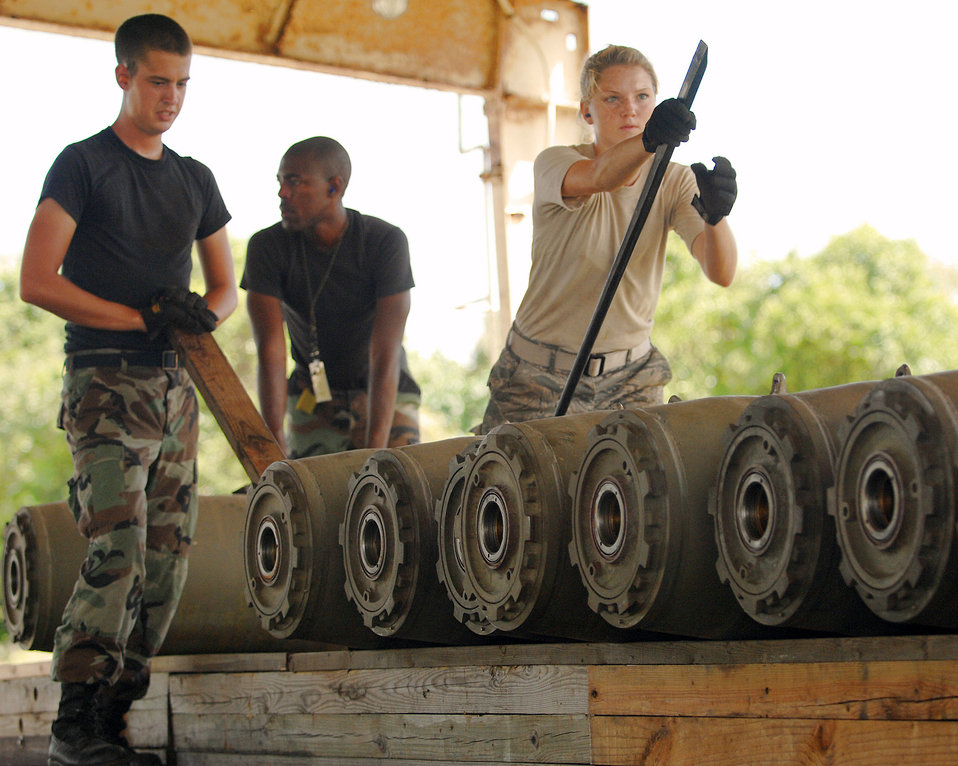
Munitions loaders arm B-52s

Airmen First Class' Casey Carrano (right) and Jason Morris (left) and Senior Airman Tyler Mann load several bombs on a truck. These Airmen and the other munitions specialists in the 36th Munitions Squadron at Andersen Air Force Base, Guam, are assembling free-fall, unguided, general purpose 750-pound bombs that will eventually be loaded on a B-52 Stratofortress. In a conventional conflict, the B-52 can carry nuclear or precision-guided conventional ordnance with worldwide precision navigation capability.